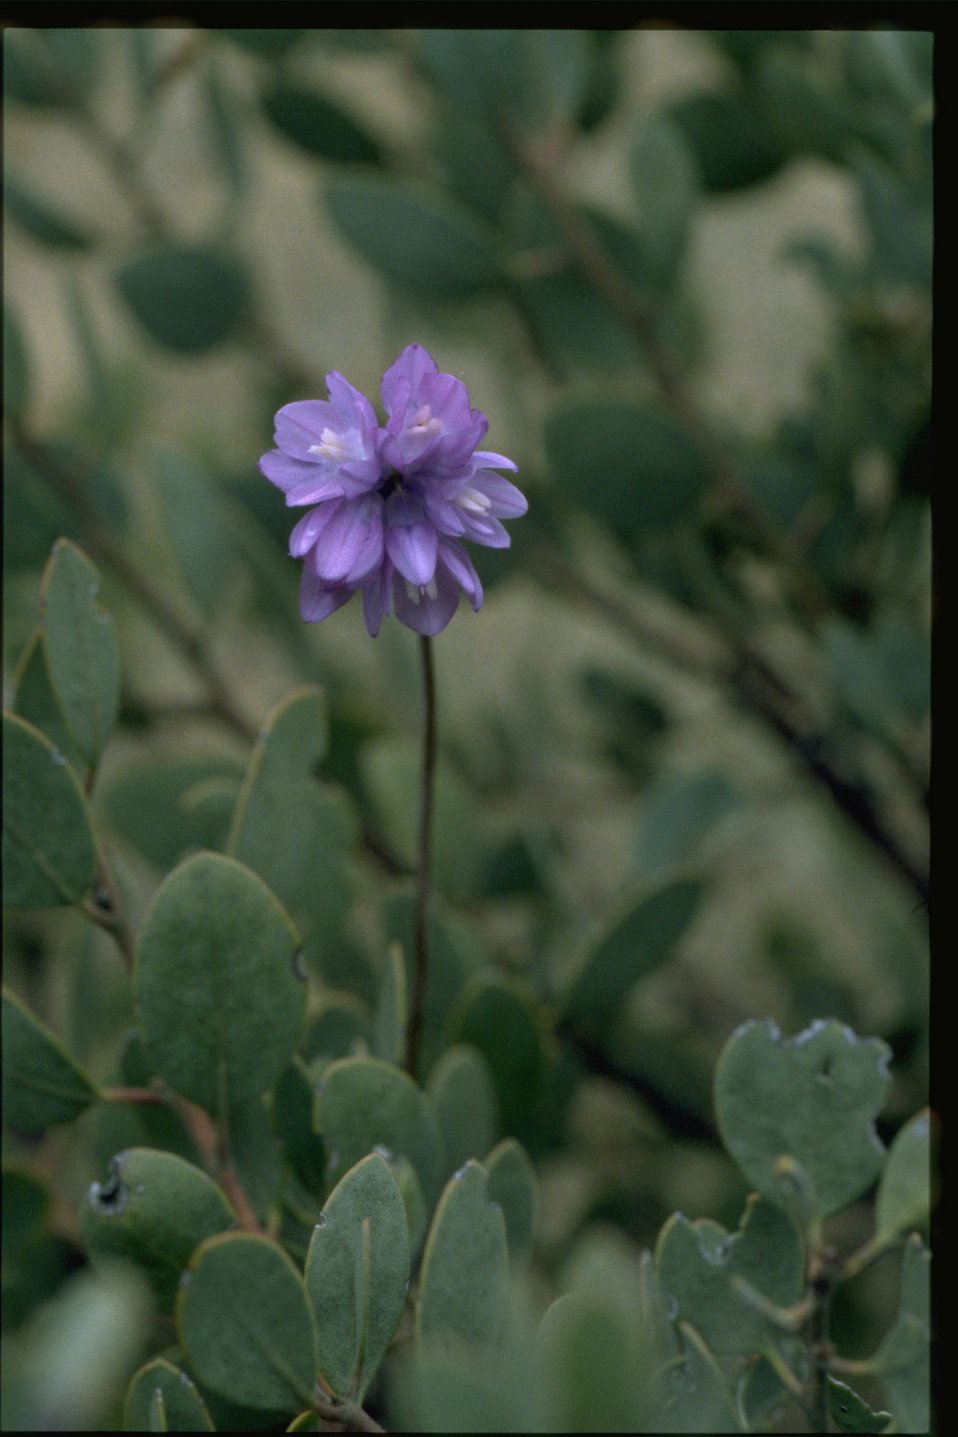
Medium shot of Dichelostemma capitatum.